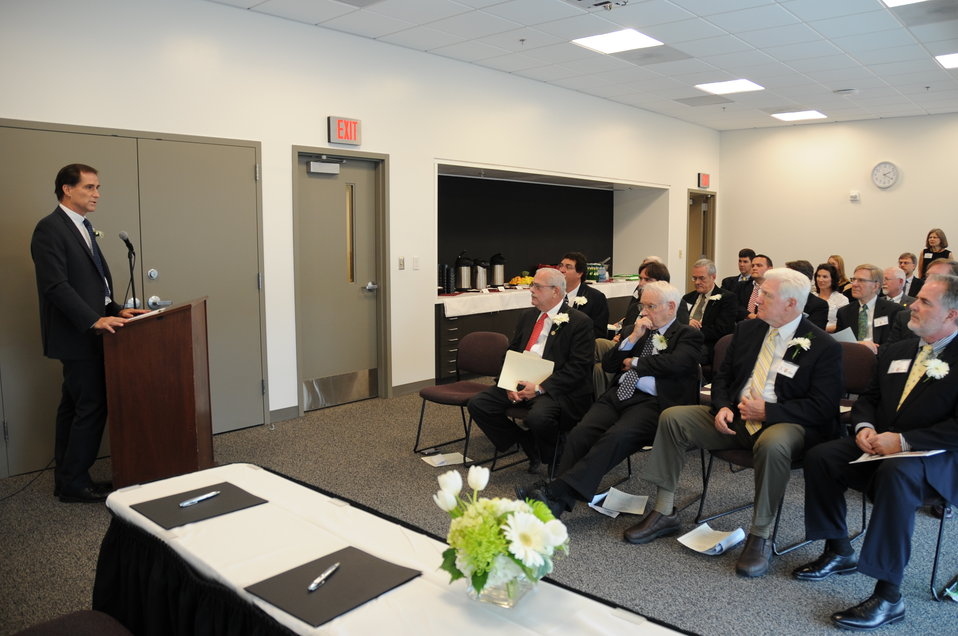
Together in Conservation

Memorandum of Understanding Signing Ceremony with U.S. Fish and Wildlife Service, Smithsonian Institution, and George Mason University. October 26, 2012